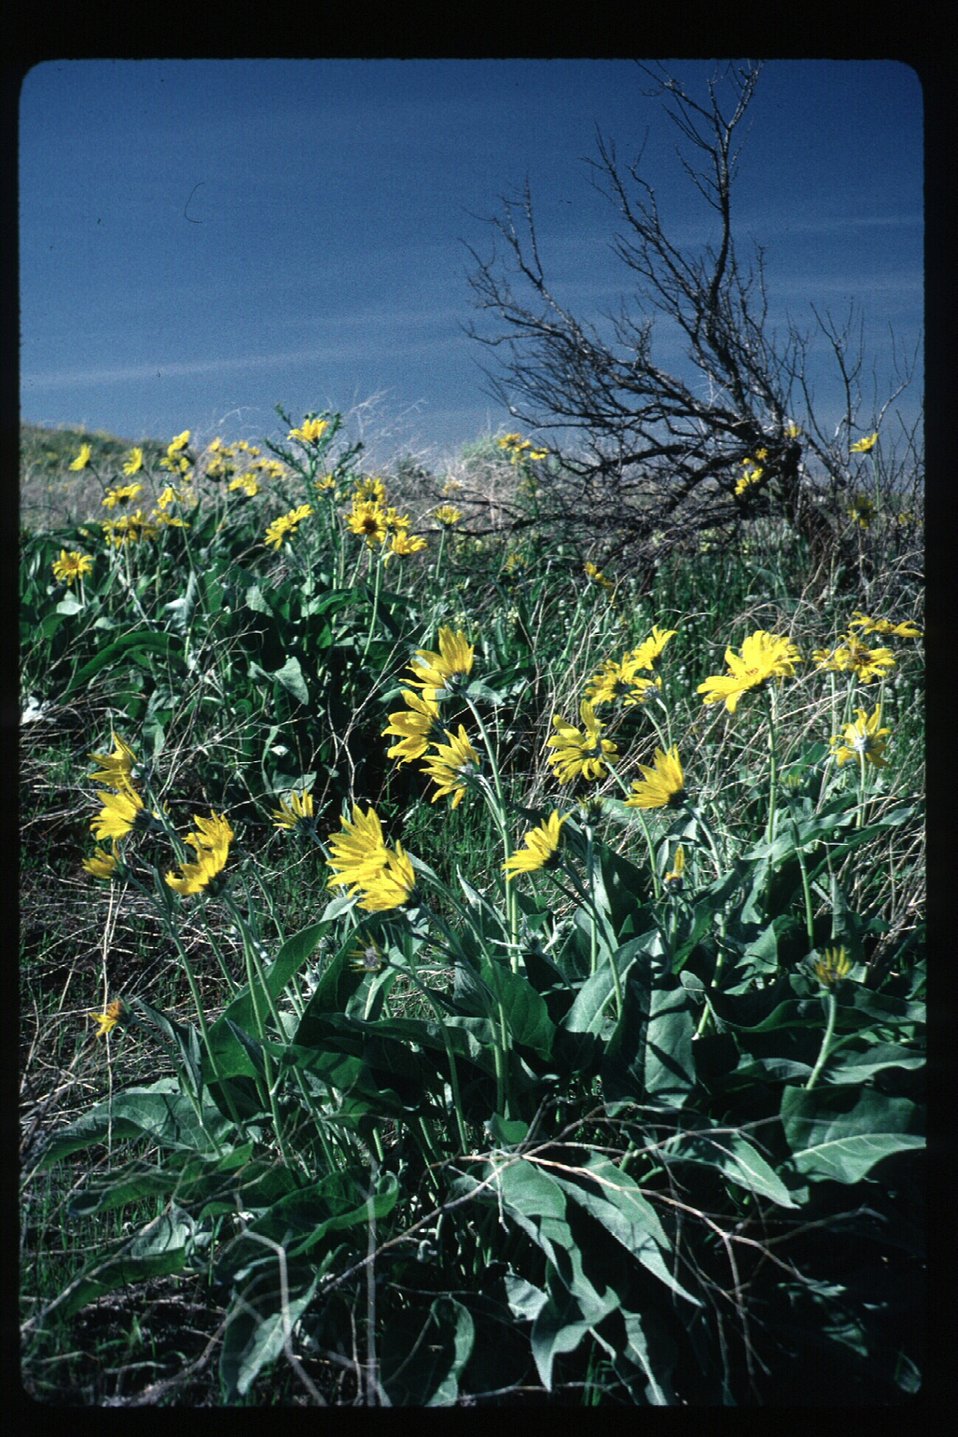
Arrowleaf Balsum Root Balsamorhiza Sagitata Scenic Wildflowers Vegetation Grass and brush USRD Upper Snake River District